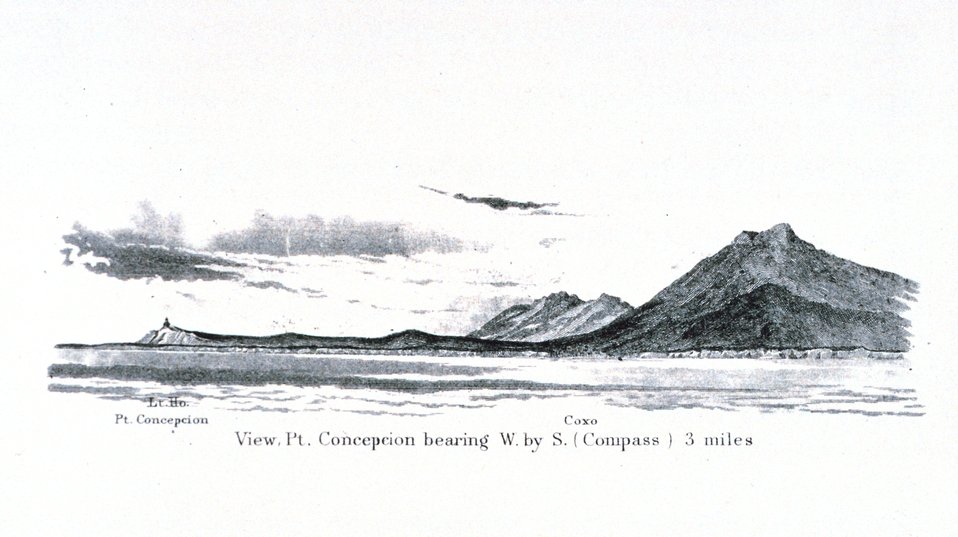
A view of Point Conception and the Point Conception Lighthouse from the Santa Barbara Channel. In: Pacific Coast. Coast Pilot of California, Oregon, and Washington Territory . By George Davidson, 1869. P. 22. Library Call Number VK947.D4 1869.